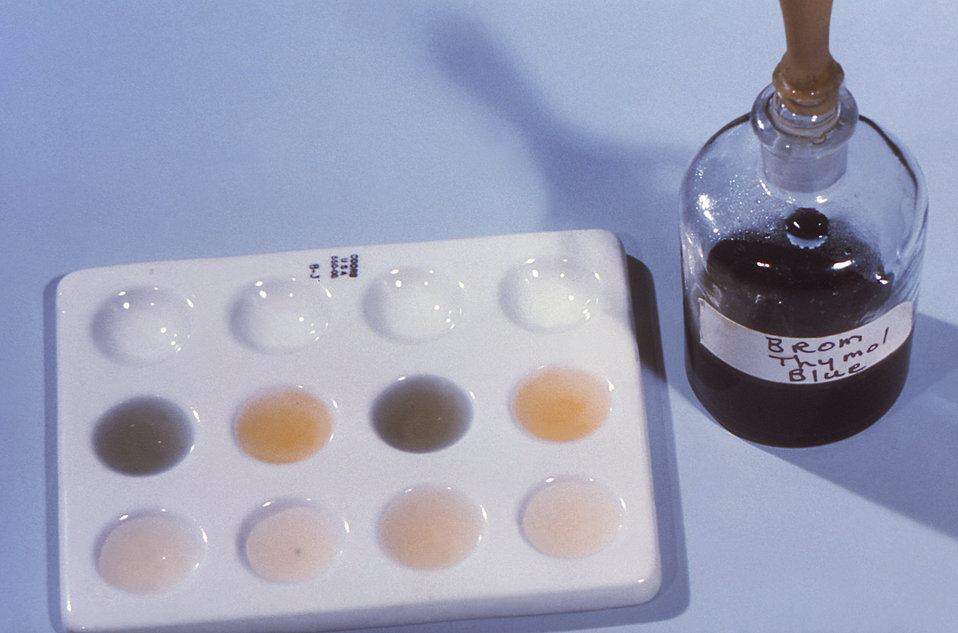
This image depicts a spot plate containing three rows of specimen wells. The closest row, i.e., Row 1, contains an unknown culture specimen with no added indicator. Row 2, or the middle row wells contain culture specimens to which bromthymol blue (bromothymol blue, BTB) indicator had been added. At right, you can see the partially-filled bottle of indicator with its dropper top applicator.